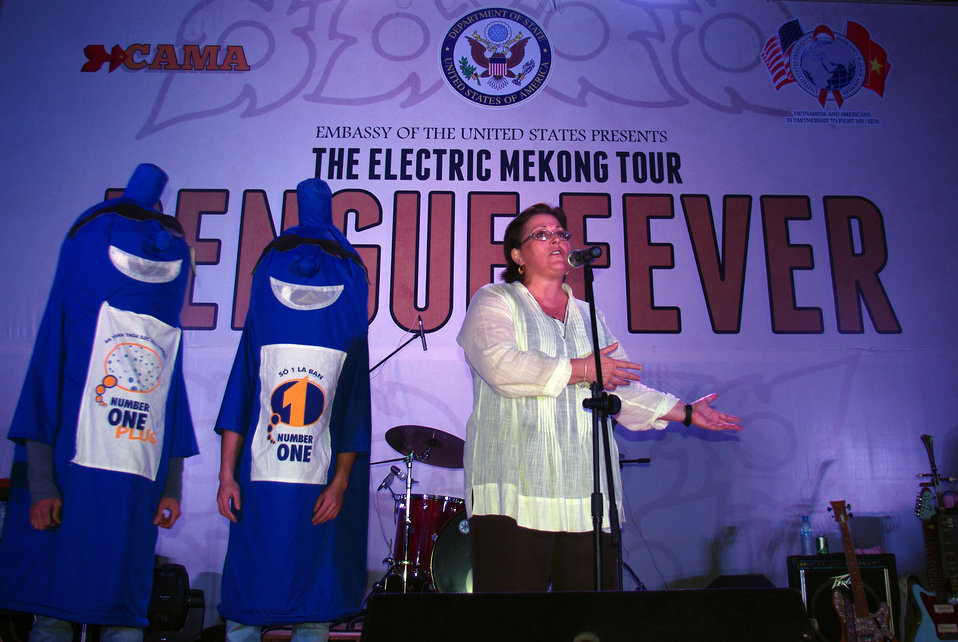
PEPFAR, U.S. Embassy Host Dengue Fever Concert in Hanoi

U.S. Embassy Deputy Chief of Mission Claire Pierangelo introduces the Dengue Fever band.